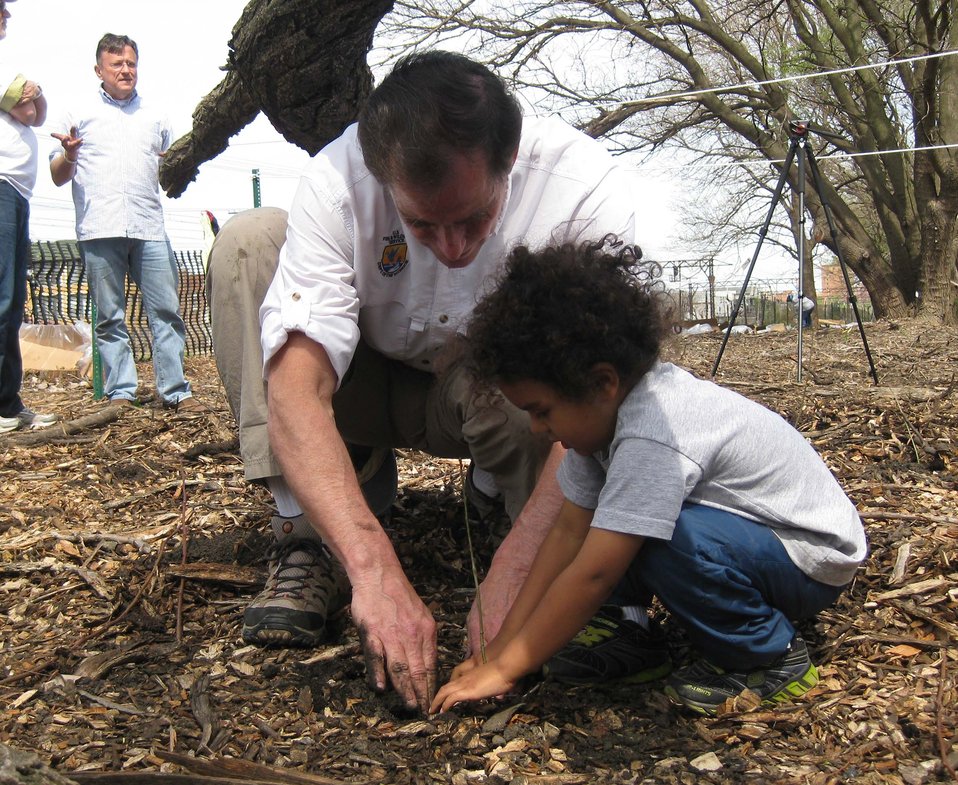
FWS Director Dan Ashe planting with young attendee

Chicago Park District Burnham Corridor Community Planting Day
May 10, 2014
Photo by USFWS; Louise Clemency